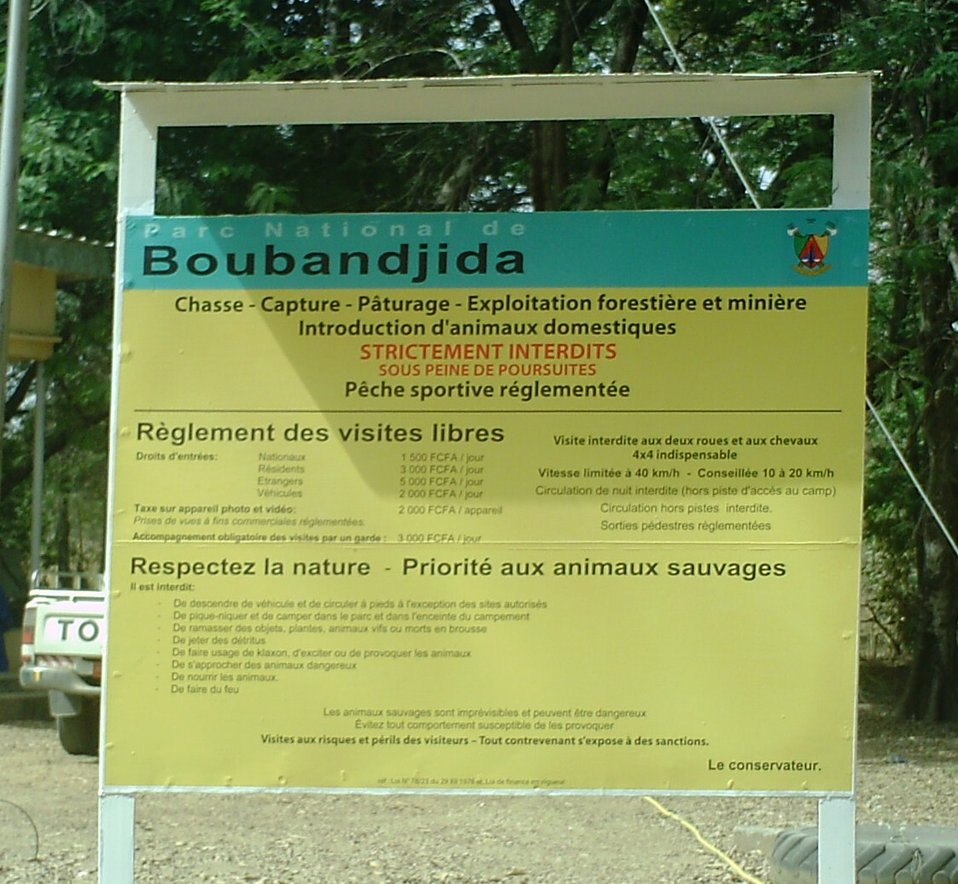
Bouba Njida

Bouba Ndjida National Park in Cameroon, location of elephant slaughter. A sign specifically prohibits poaching.